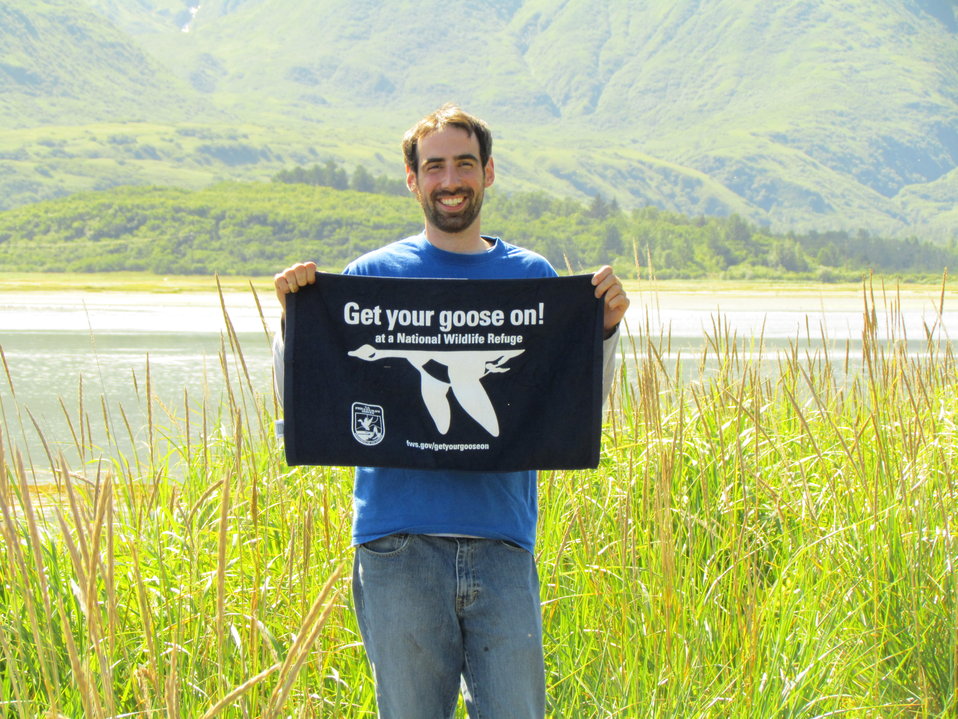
Get Your Goose On! - Alaska Style

Student Conservation Association intern, Rory Psotka

Credit: Shelly Lawson / USFWS

The Kodiak National Wildlife Refuge is a United States National Wildlife Refuge in the Kodiak Archipelago in southwestern Alaska, United States.

The Kodiak National Wildlife Refuge includes the southwestern two-thirds of Kodiak Island, Uganik Island, the Red Peaks area of Afognak Island and all of Ban Island in the archipelago. It encompasses 1,990,418 acres (8,054.94 km2).[2] The refuge is administered from offices in Kodiak.

The refuge contains seven major rivers and about 100 streams. It is a spawning ground for all six species of Pacific Ocean salmon, trout and several other fish species, as well as a nesting ground for 250 species of bird, many of which feed on salmon. The refuge has only six native species of mammals: Kodiak brown bear, red fox, river otter, ermine, little brown bat and tundra vole. The non-native mammals Sitka deer, mountain goat, Roosevelt elk, snowshoe hare and beaver were introduced to the archipelago between the 1920s and 1950s and are now hunted and trapped.

The climate of the refuge is that of southern Alaska, mild and rainy. Many areas in the refuge are densely forested with Sitka Spruce at lower elevations. There are grasslands in drier areas and at higher elevations. The refuge contains several small glaciers.